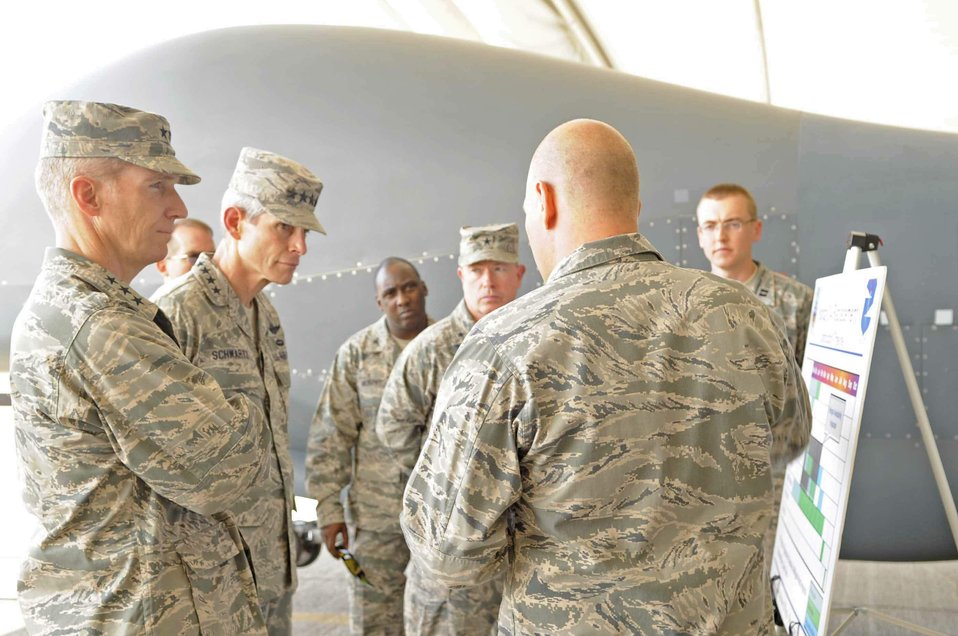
Chief of staff: Play your positions credibly

Air Force Chief of Staff Gen. Norton Schwartz and Lt. Gen. Gilmary Michael Hostage III receive a briefing on the intelligence, surveillance and reconnaissance platform of the 380th Air Expeditionary Wing Nov. 13, 2009, at an air base in Southwest Asia. General Hostage is the commander of U.S. Air Force Central Command.